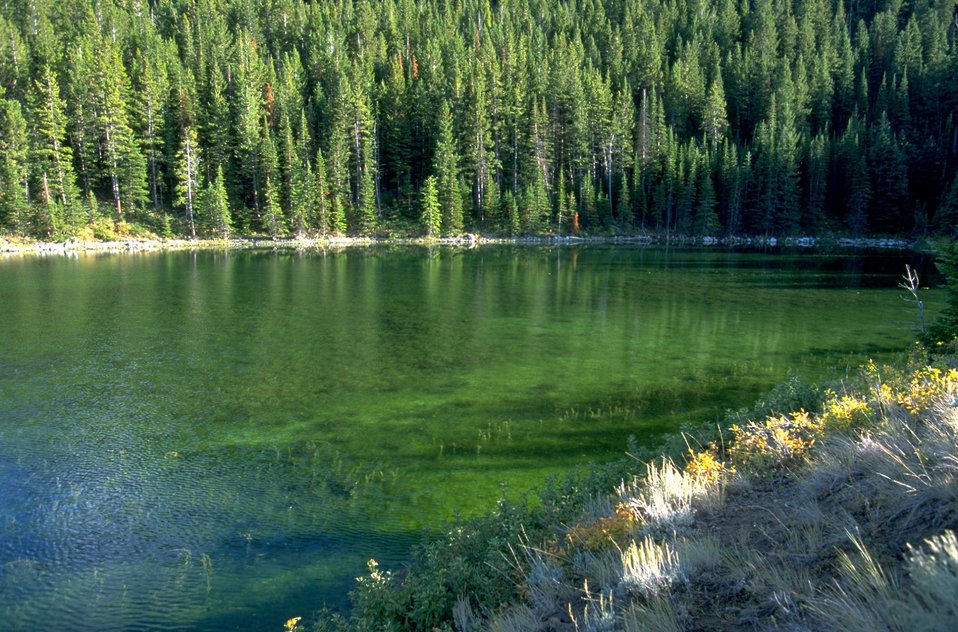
Reflections on Axolotl Lake